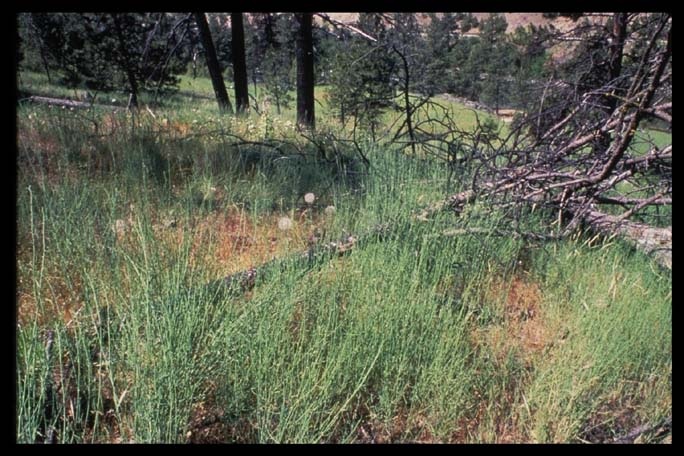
Landscape